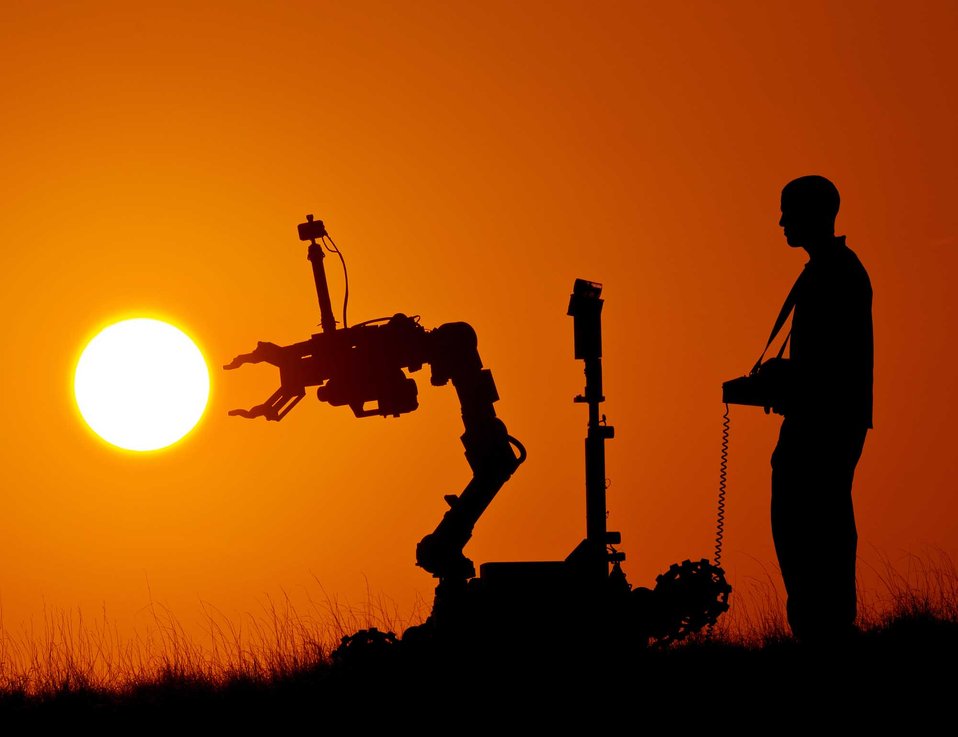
Mighty Mouse, a Robotic Vehicle Range (RVR) at Sandia National Laboratory.

The Robotic Vehicle Range is located on Kirkland Air Force Base in Albuquerque, NM. It is the Mobile Robotics Department, a branch of Sandia's Intelligent Systems and Robotics Center (ISRC). The departments applies advanced technologies in engineering design, modeling simulation, embedded computing, materials, power sources, and control theory to needs requiring systems analysis and integration to rapidly engineer prototypes.